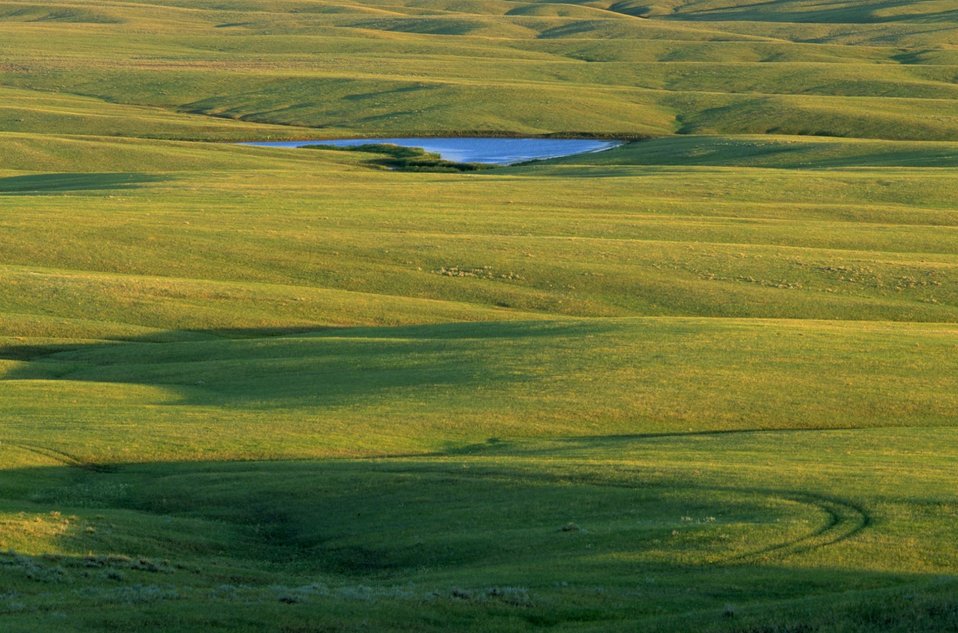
Reservoir in Grassland 35 miles north of Belle Fourche